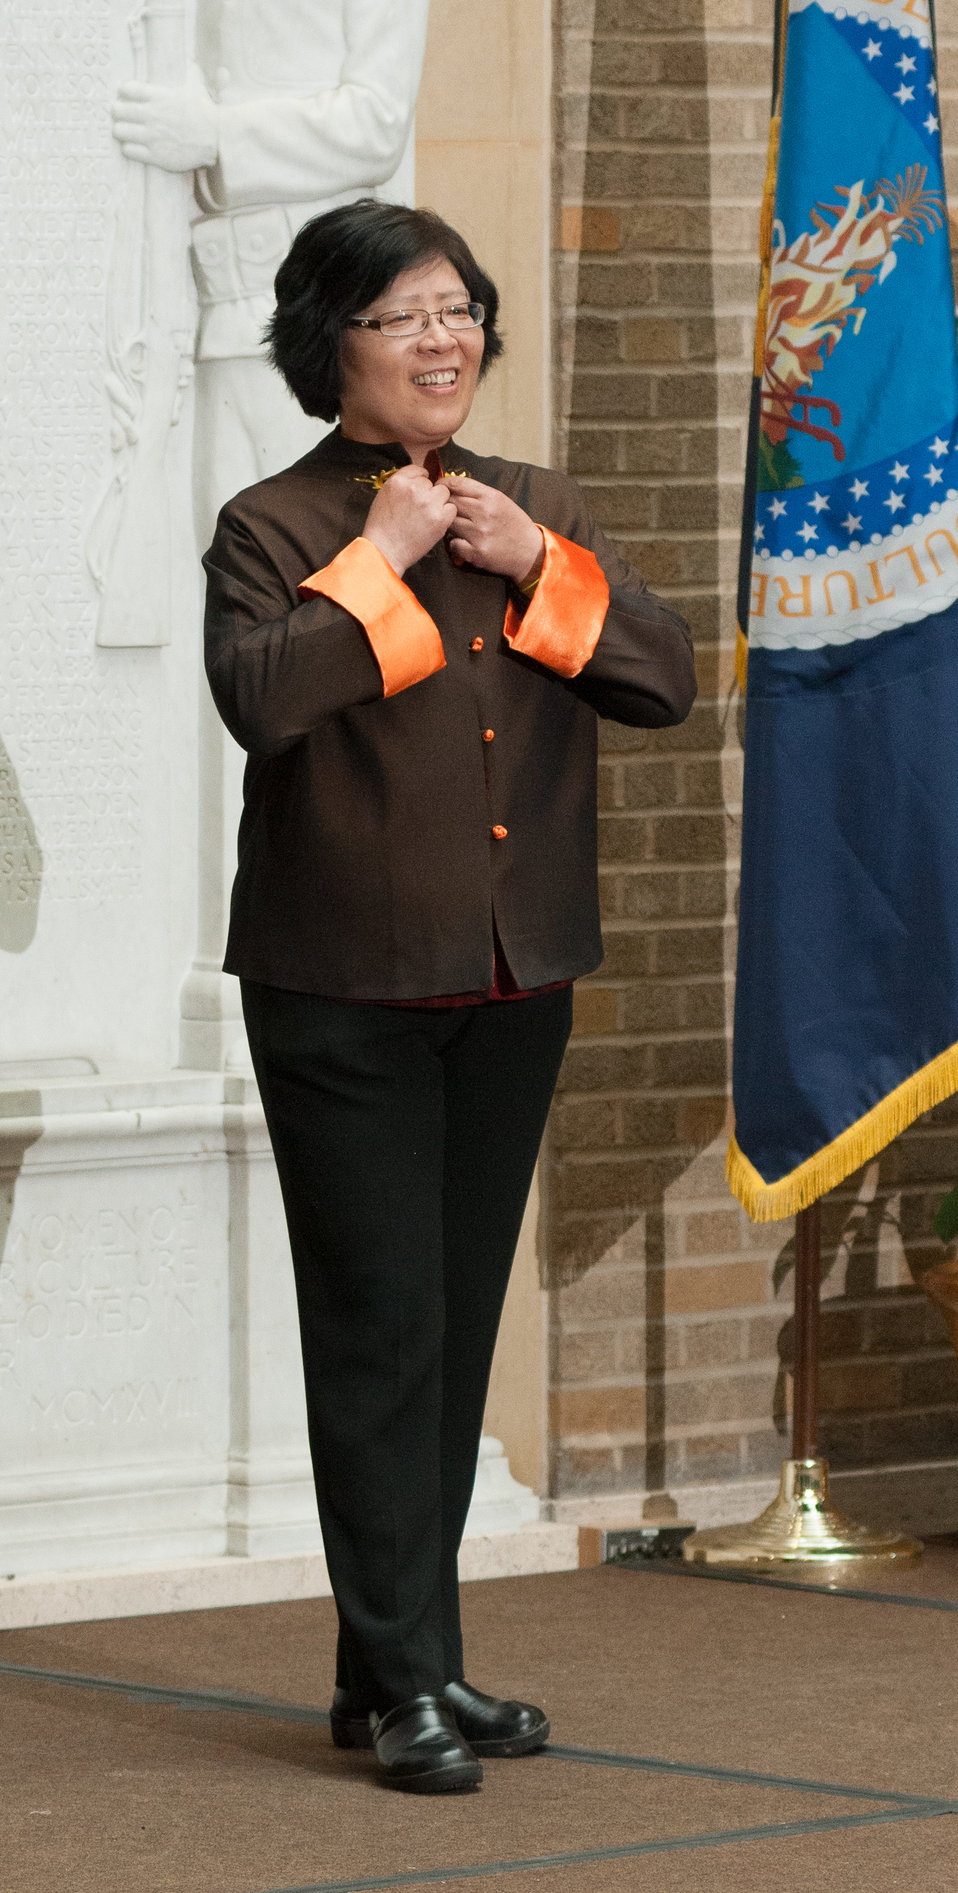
Traditional clothing from various Asian countries were demonstrated during this show of clothing, part of the U.S. Department of Agriculture (USDA) Asian Pacific American Heritage Month Observance program, at the USDA headquarters, Whitten Building patio, in Washington, D.C., on Thursday, May 23, 2013. This year’s theme is “Building leadership; Embracing the Cultural Values and Inclusions.”